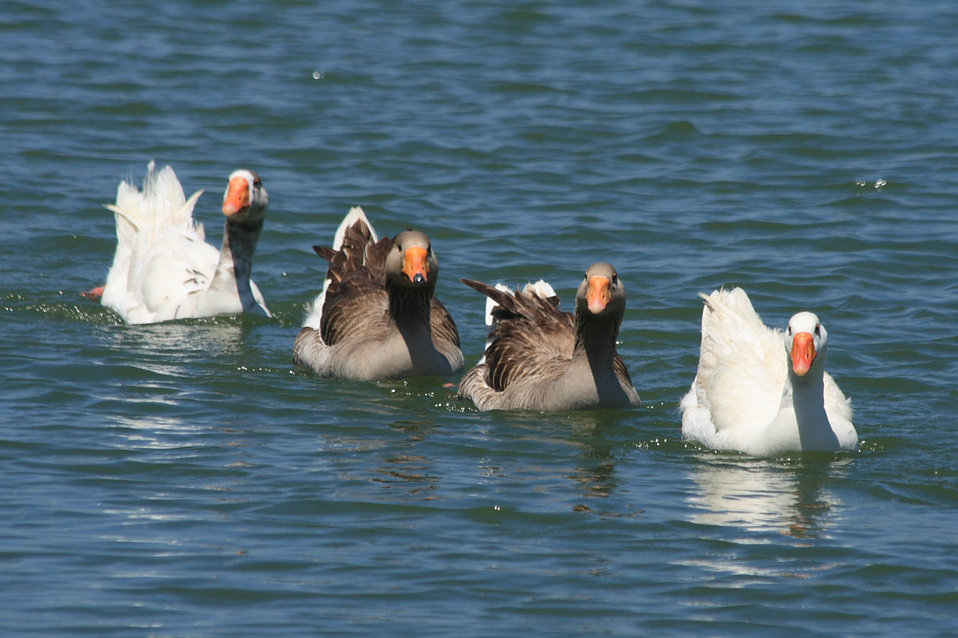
Four swimming geese

Four geese line up for a swim in a local lake.